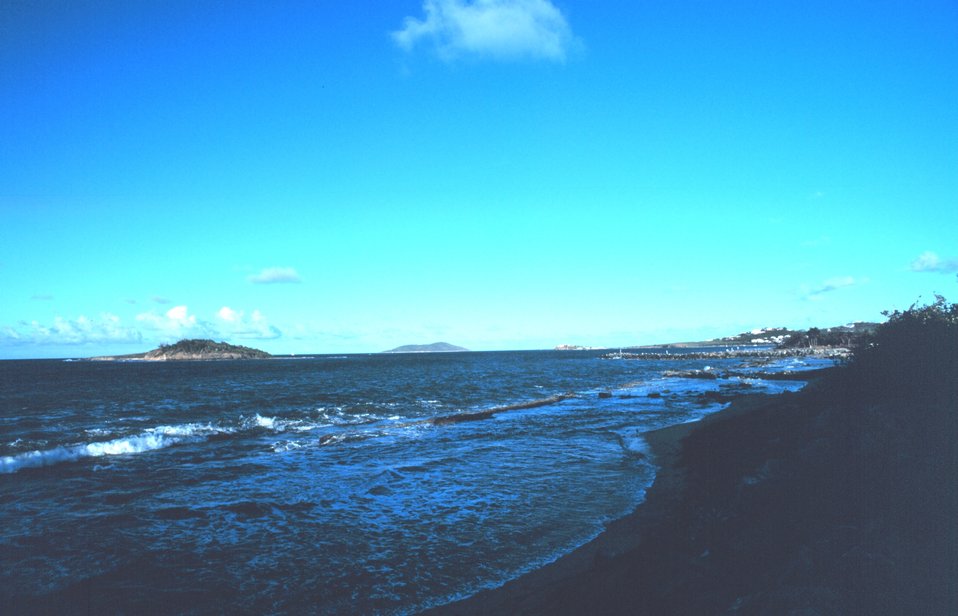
Looking ENE from Chenay Bay Beach towards Green Cay to left and Buck Island to right.